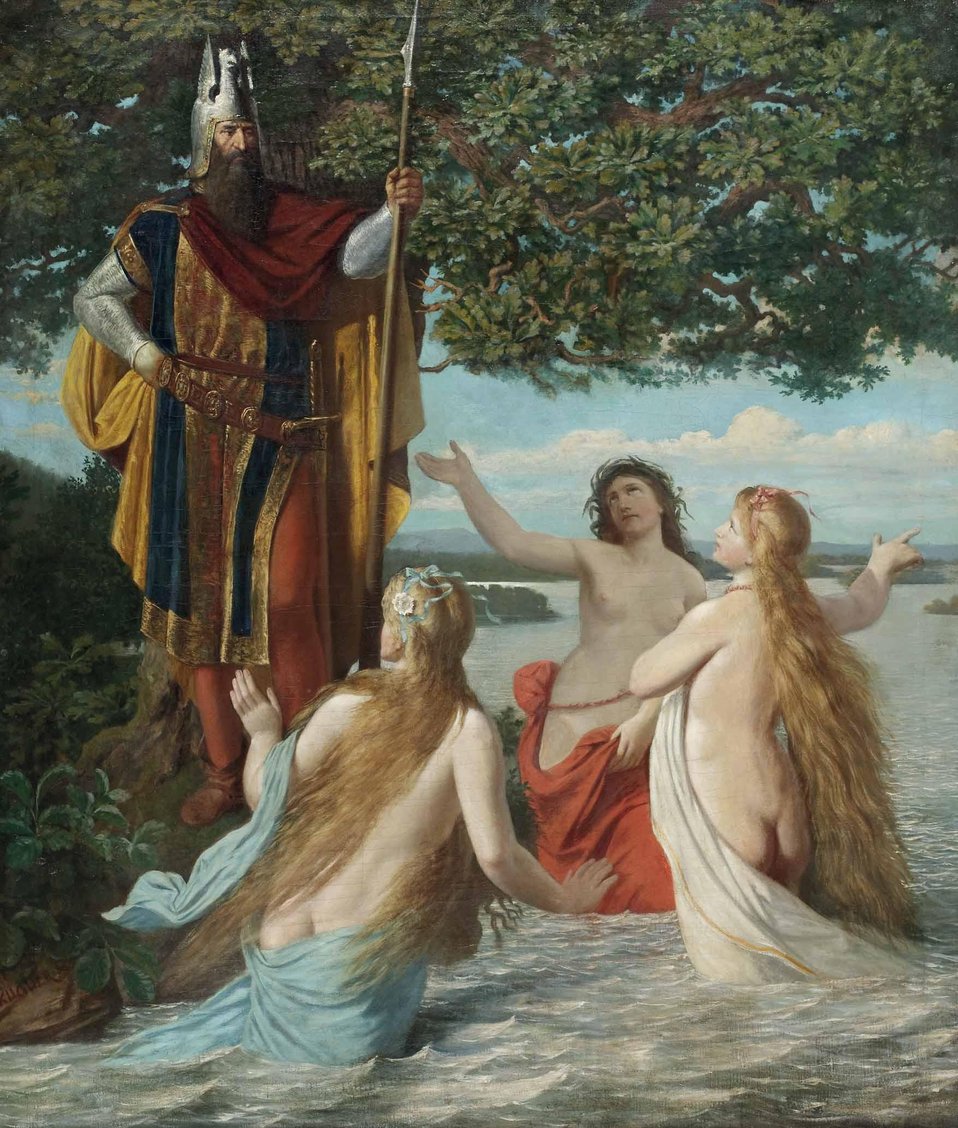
Deutsch: 'Hagen bei den drei Rheintöchtern'; signiert: G. Kugler, Öl auf Leinwand, ca. 128 x 109 cm